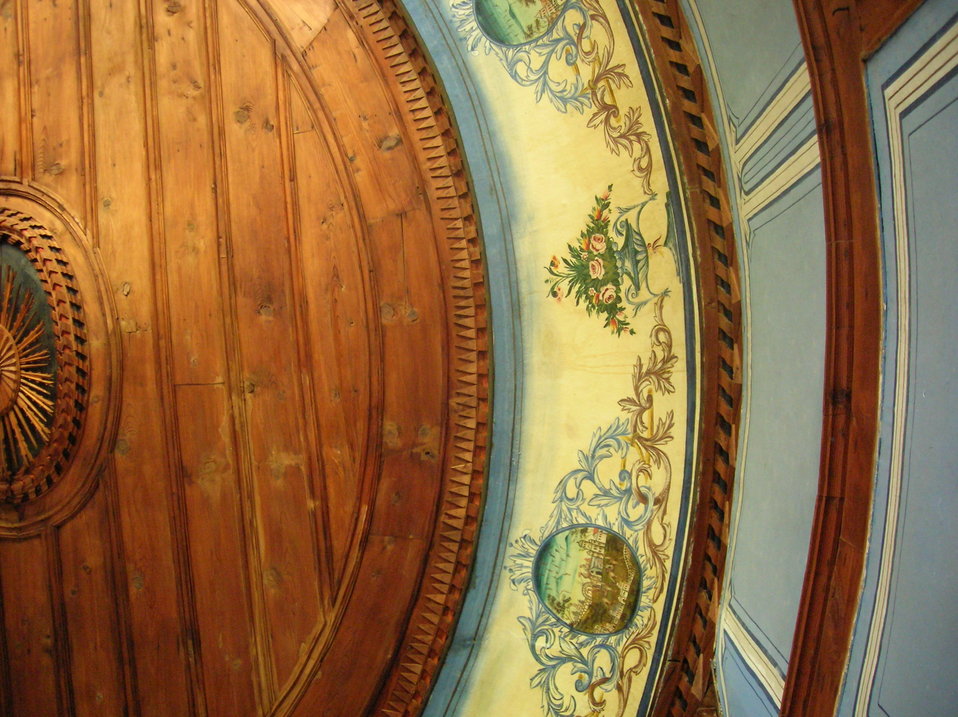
Detail of Lyutov House, in Koprivshtitsa (Bulgaria). Wooden ceiling of the main room. Fran√ßais†: D√©tail de la Maison Liutov, √† Koprivchtitsa (Bulgarie). Plafond en bois dans la pi√®ce principale.